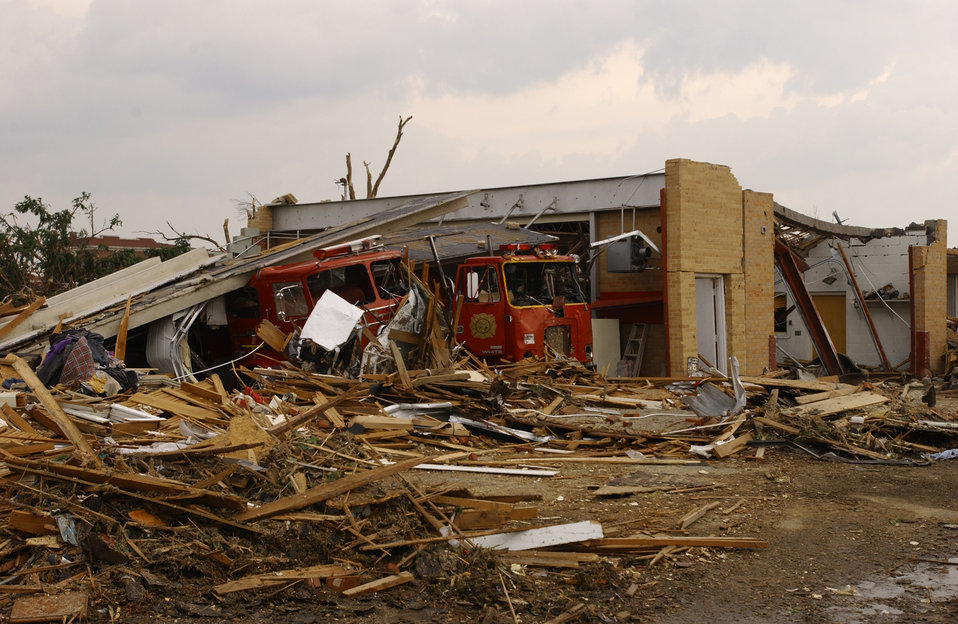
National Guard cleaning up devastated Kansas town

The Greensburg Fire department is shown following an F5 tornado hit this Kansas town May 4. Around 500 Army and Air National Guardmembers are in Greensburg removing debris, providing security, generating power, preparing food and performing other disaster relief functions.